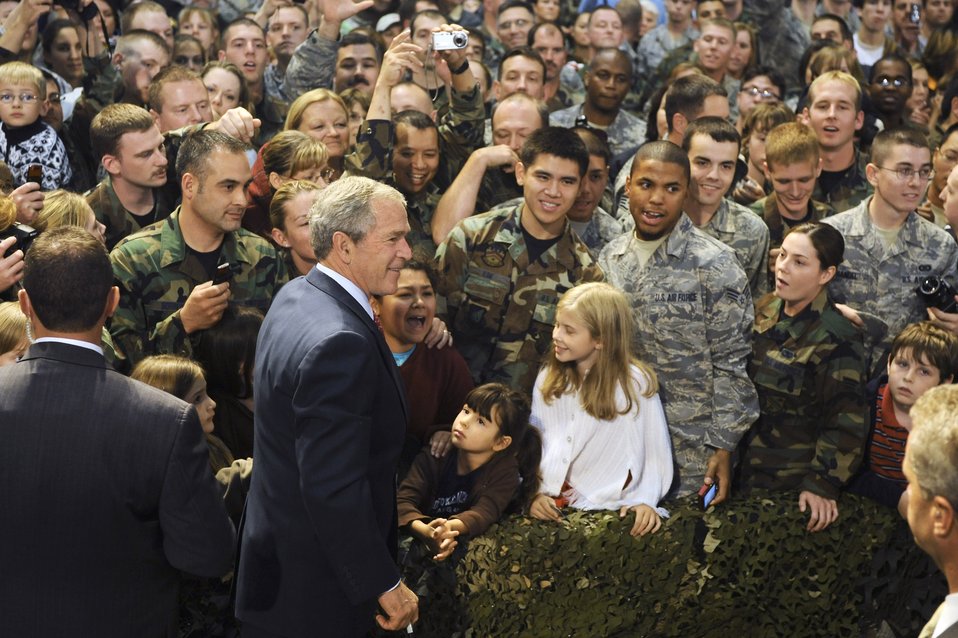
President visits Eielson

President George W. Bush greets servicemembers and family members Aug. 4 at Eielson Air Force Base, Alaska. The president made a short stop at Eielson AFB during his trip to the 2008 Olympic Games being held in Beijing.